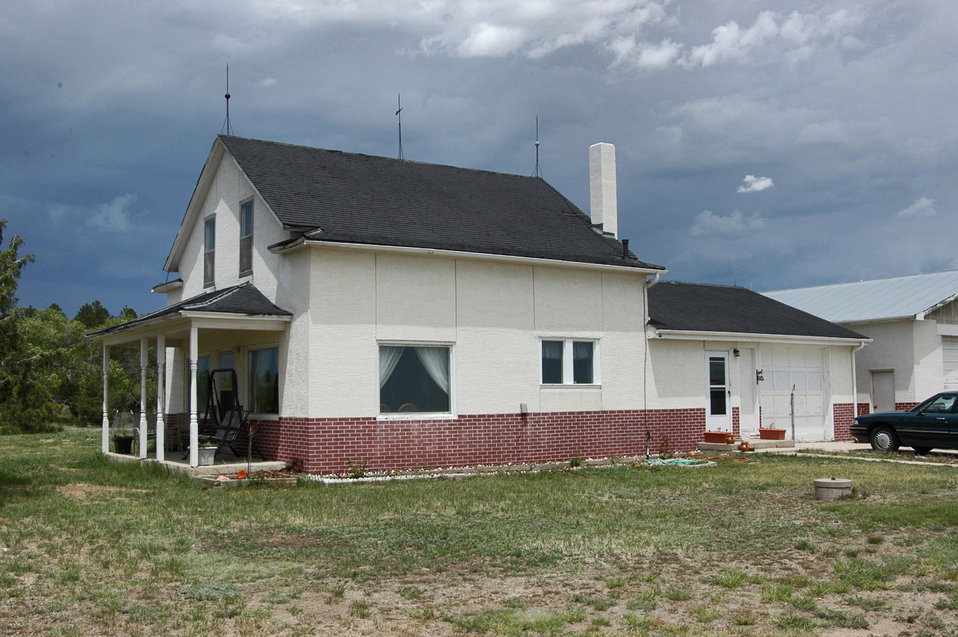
Home Makeover

PEYTON, Colo. -- The Barrett's 101 year-old former home was demolished by the